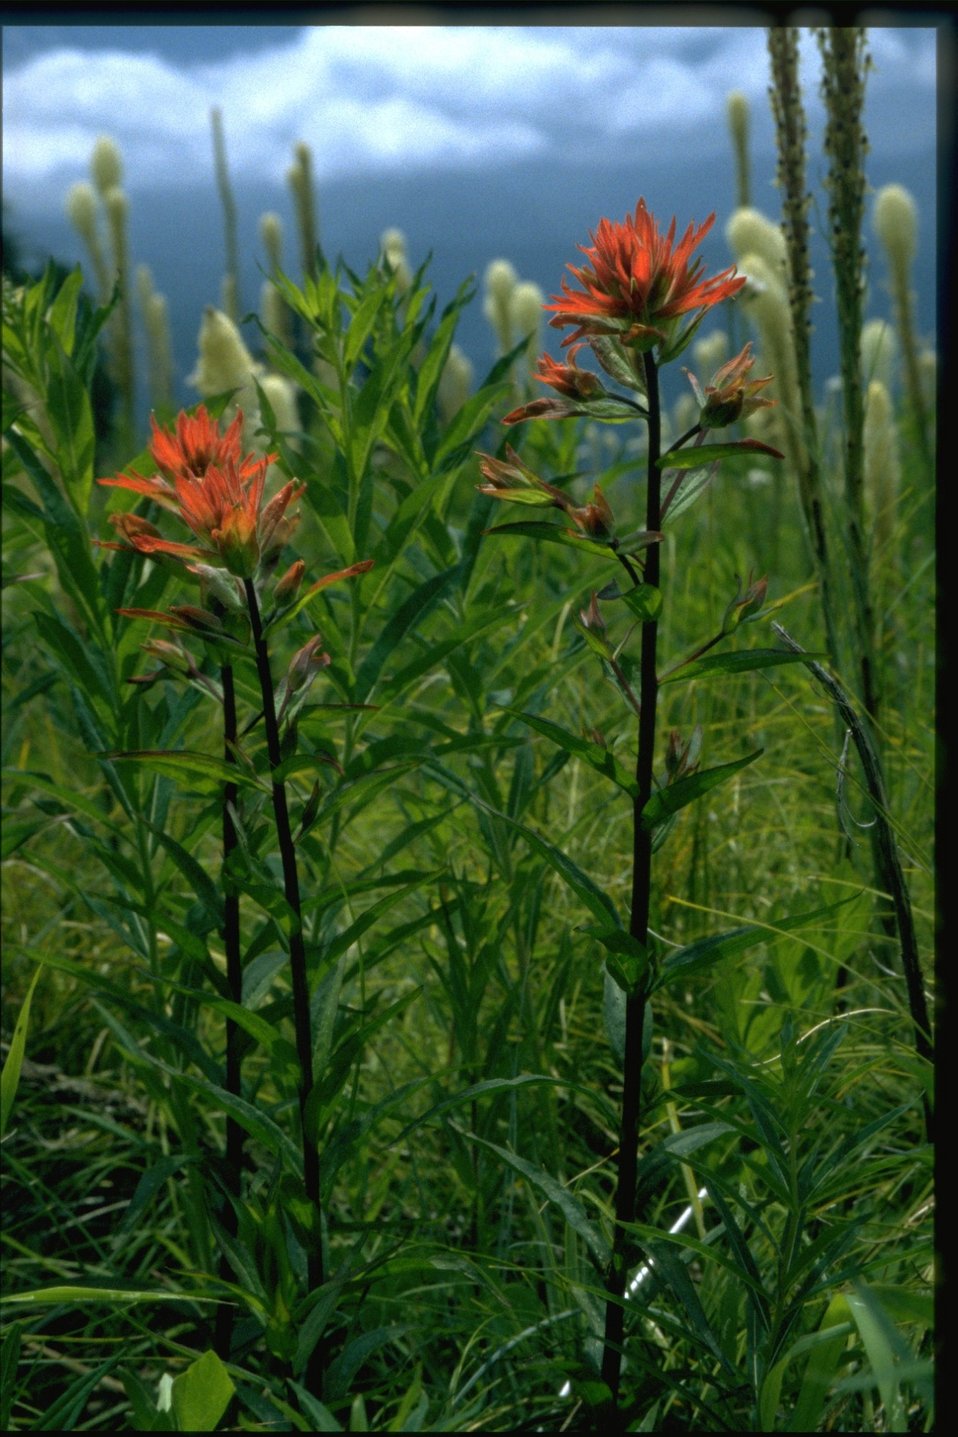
Medium shot of Castilleja, Xenophyllum, Archillea.